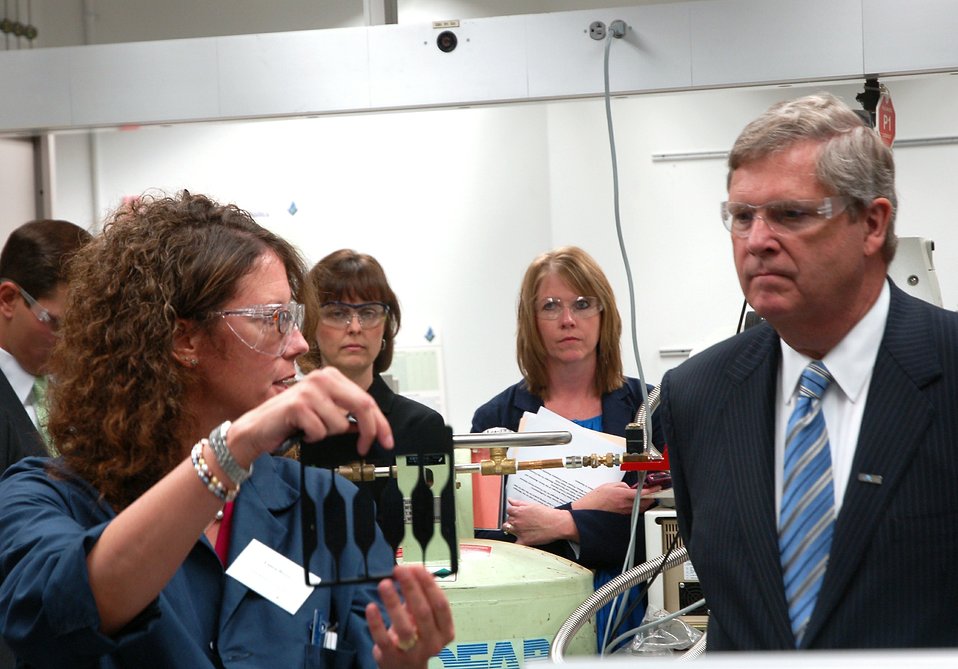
Ford technician Laura Beyer shows Agriculture Secretary Tom Vilsack bio-based rubber samples made from soybeans at the Ford Plant in Dearborne, MI on Tuesday, August 7, 2012. Secretary Vilsack was in Michigan to discuss statewide economic growth opportunities in the bio-based manufacturing industry in Michigan.